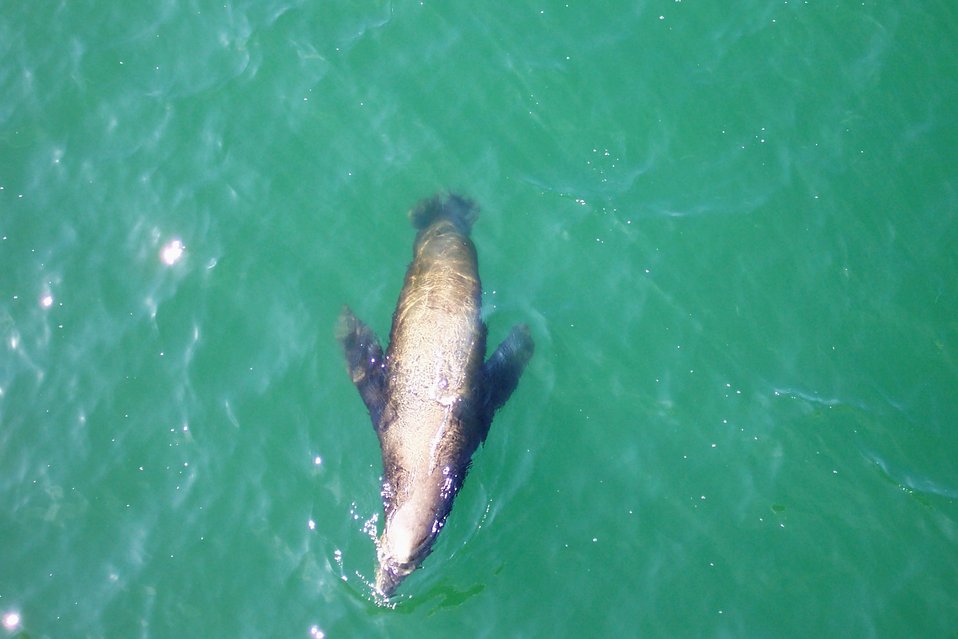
A sealion seen from the Santa Cruz wharf.